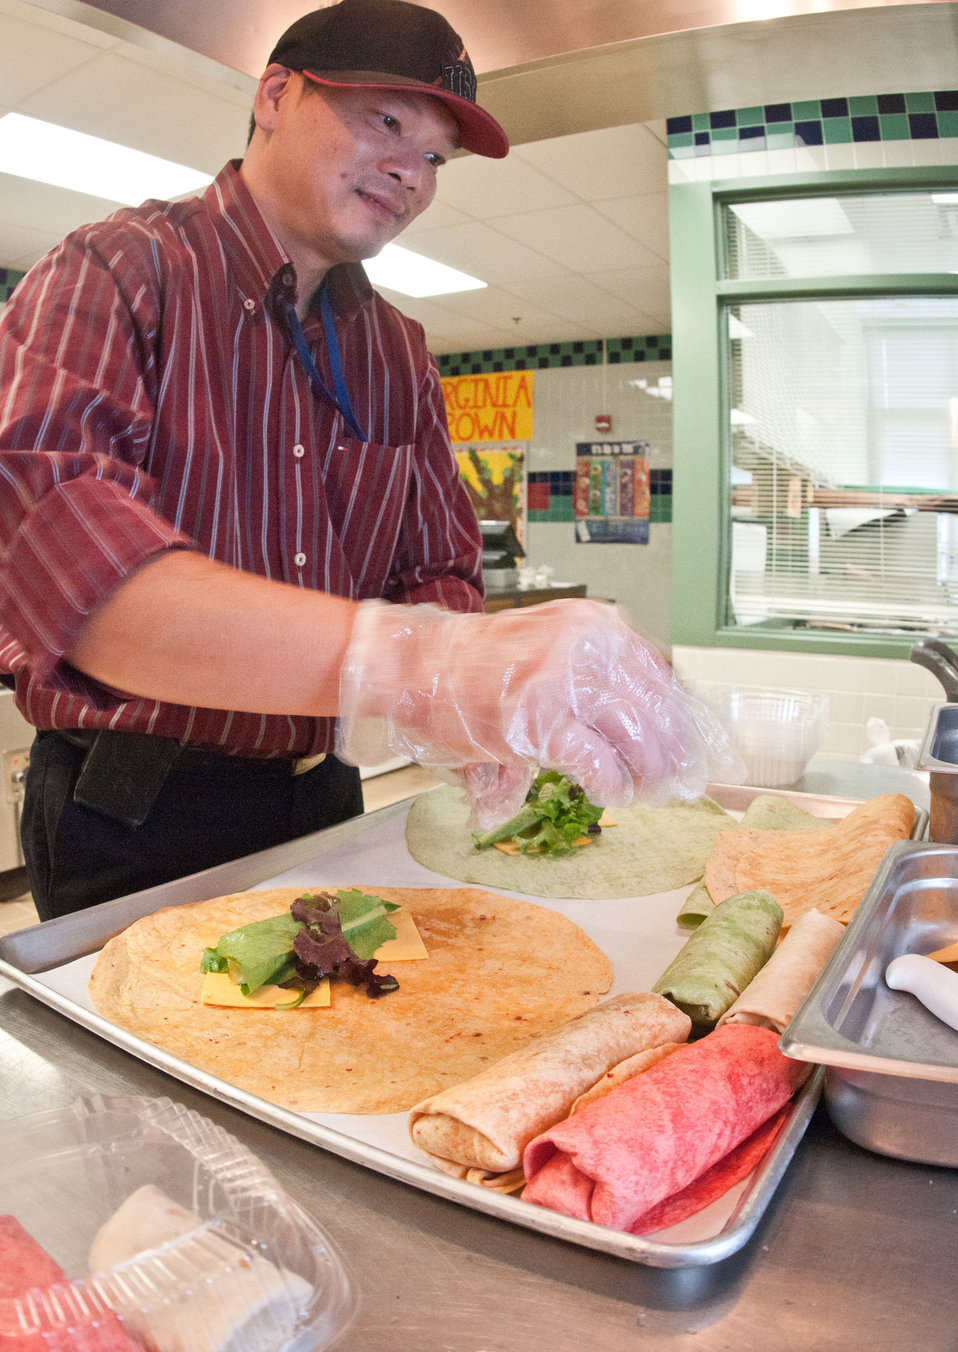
Arlington Public Schools, Food Services Specialist Thai Nguyen made Turkey Wraps on site for the school lunch program at Nottingham Elementary School in Arlington, VA, on Wednesday, October 12, 2011. Today's menu included roasted chicken, roasted butternut squash with dried cranberries, farm fresh mixed lettuce salad, turkey wraps, pita wedges, hot muffins, carrots, pears and more.